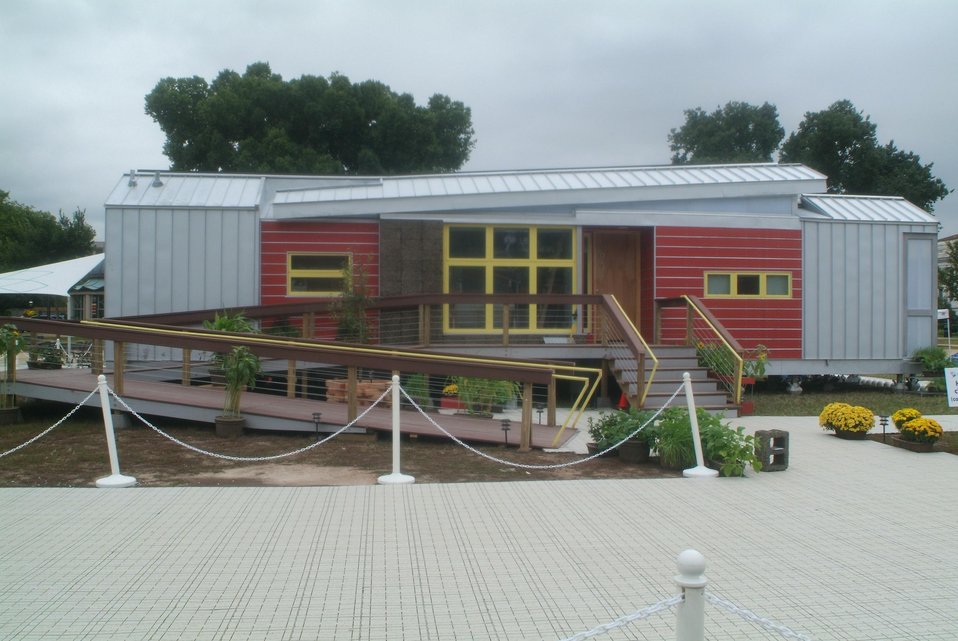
UNIVERSITY OF COLORADO WON THE FIRST PLACE PRIZE AT THE 2005 SOLAR DECATHLON.

THE SOLAR DECATHLON HELD ON OCTOBER 7-16, 2005 IN WASHINGTON, DC. THE PARTICIPANTS WERE FROM 18 COLLEGES AND UNIVERSITIES AROUND THE WORLD. THE TEAMS COMPETED IN THE DESIGN, BUILD AND OPERATED THE MOST ATTRACTIVE AND ENERGY-EFFICIENT SOLAR POWERED HOME. THE PARTICIPANTS ONLY USED ENERGY FROM THE SUN TO GENERATE ELECTRICITY TO OPERATE A HOME.